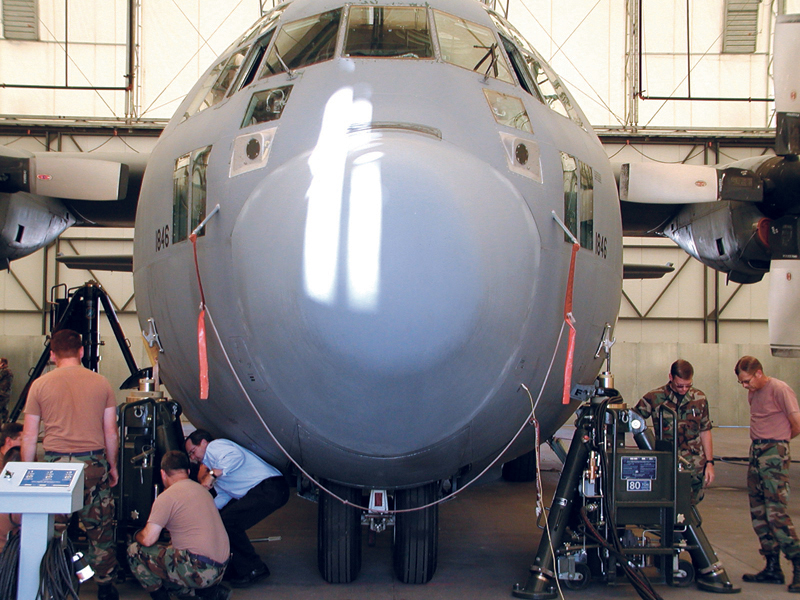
Testing universal aircraft jacks

GOWEN FIELD, Idaho -- Air Expeditionary Force Battlelab officials and maintainers from the 124th Aircraft Maintenance Squadron perform a concept demonstration on an Idaho Air National Guard C-130 Hercules aircraft here June 23. The aircraft was successfully hoisted into the air using the new universal jacking system developed by battlelab staff.